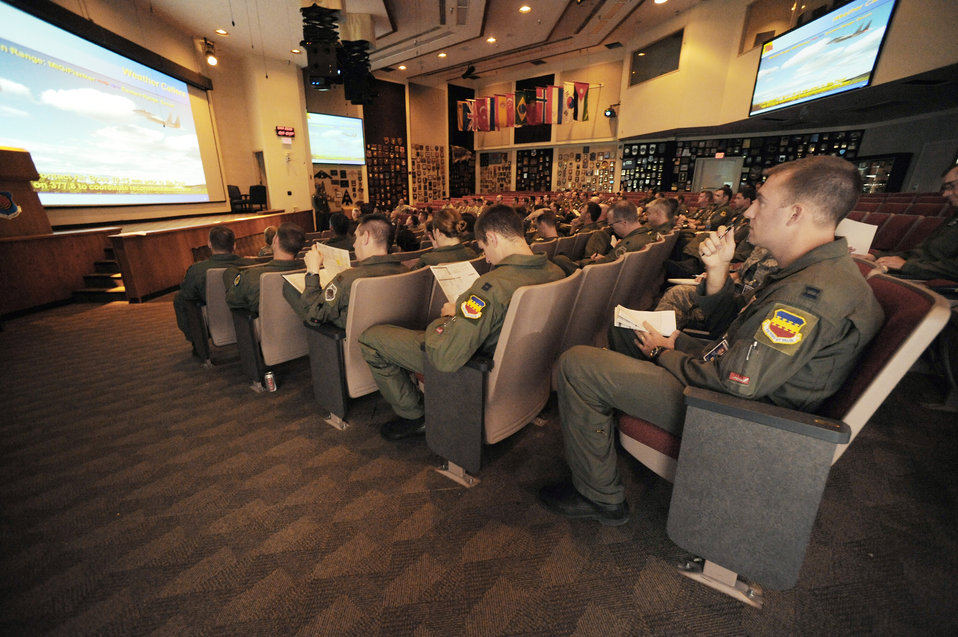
Realistic training with Red Flag

Capt.Taylor Blevins sits in the mass briefing room with approximately 50 other U.S. and allied nation pilots July 16 at Red Flag 09-4 at Nellis Air Force Base, Nev. Mass briefings can last more than an hour and provide pilots with vital information for their simulated combat scenarios. Captain Blevins is assigned to the 77th Fighter Squadron.